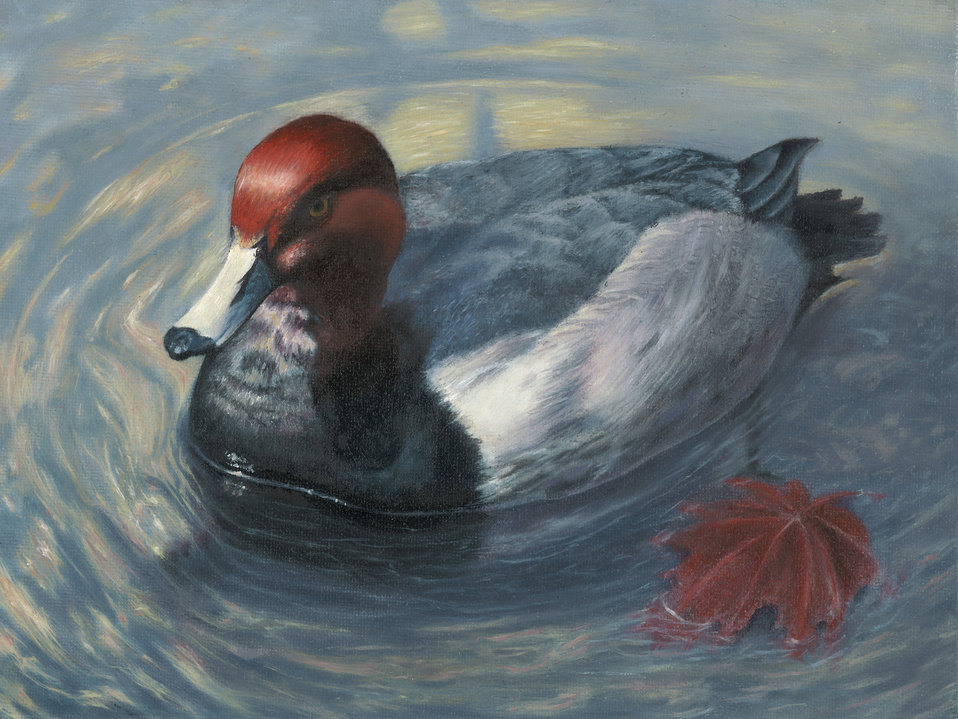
Washington

2012 Jr Duck Stamp Program
State Best of Show
Washington